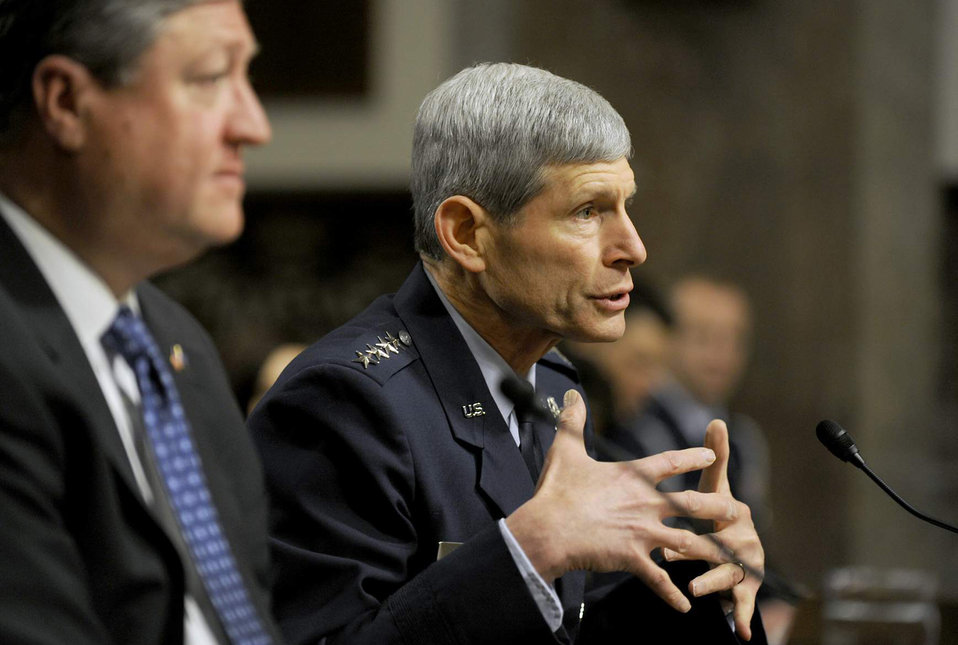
2012 Budget

Air Force Chief of Staff Gen. Norton Schwartz answers a question on the Air Force's fiscal 2012 budget proposal during a Senate Armed Services Committee hearing March 17, 2011, in Washington, D.C.